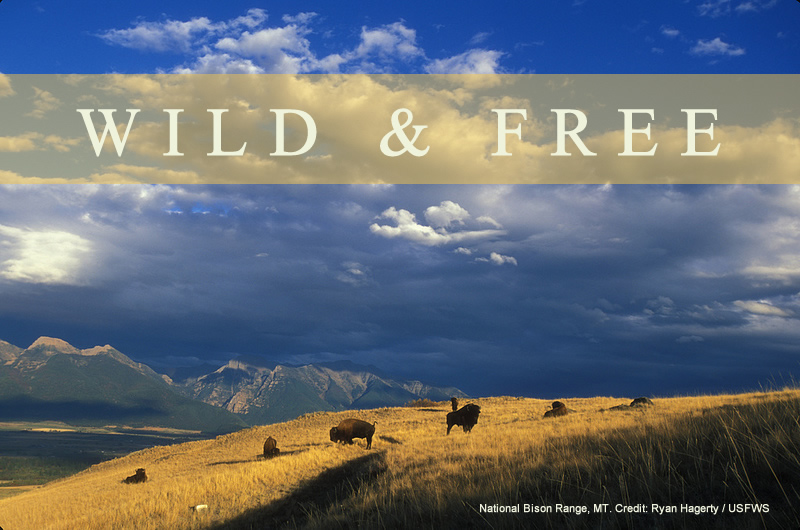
Wild and Free

National Bison Range, MT